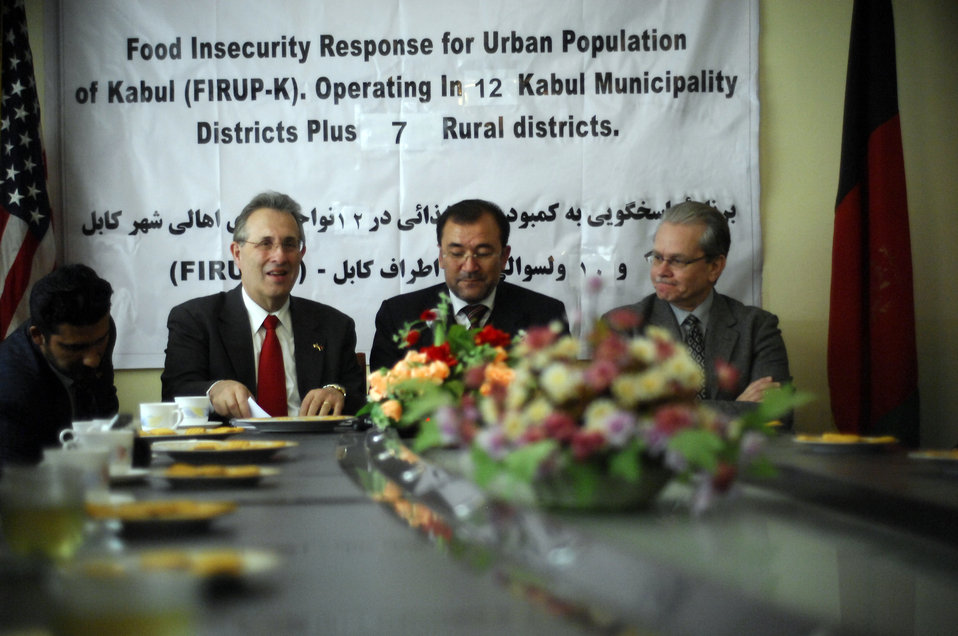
Care88 (1)